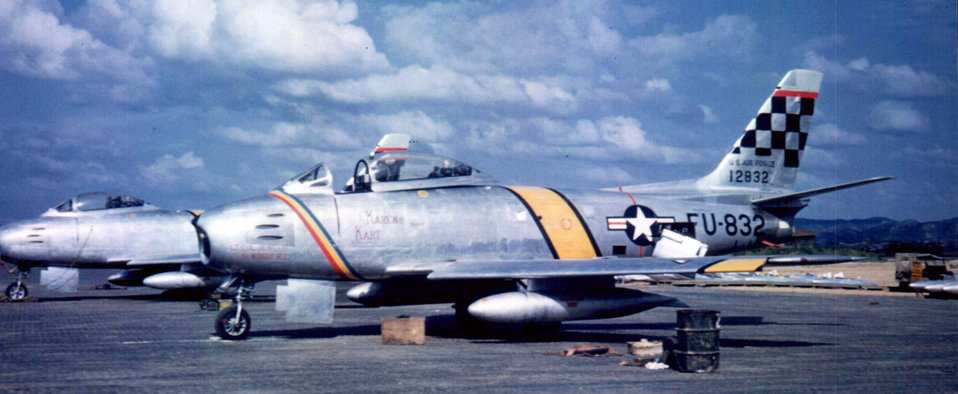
F-86 Sabres in Korea

The F-86E Sabre flown by Lt. Col. Albert Kelly, 51st Fighter Interceptor Group commander,during the Korean War in 1952. The F-86 was the Air Force's first swept wing fighter.